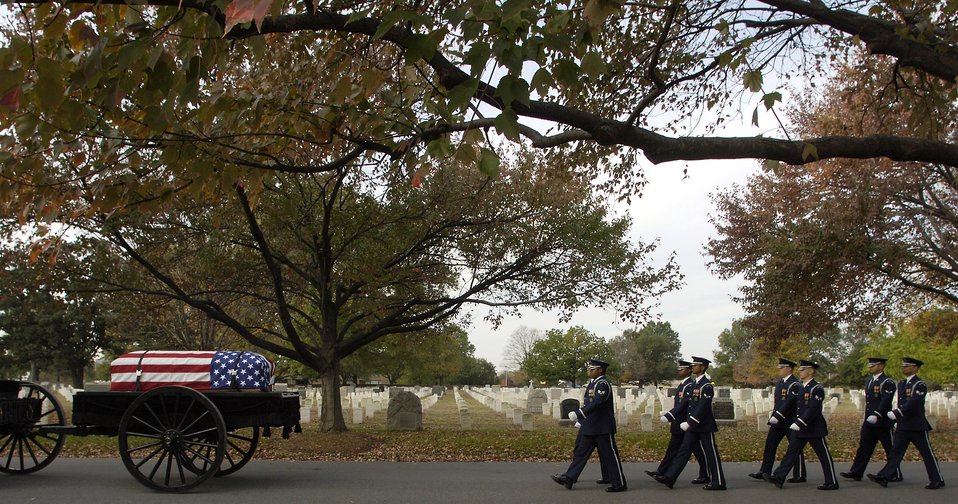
Honor guard transitions to new funeral guidelines

Members of the Air Force Honor Guard march behind a caisson during a military honors funeral ceremony Nov. 1 for retired Lt. Gen. Marvin McNickle at Arlington National Cemetery, Washington, D.C. Beginning Nov. 1, honor guards across the Air Force will change the way they perform retiree funerals.